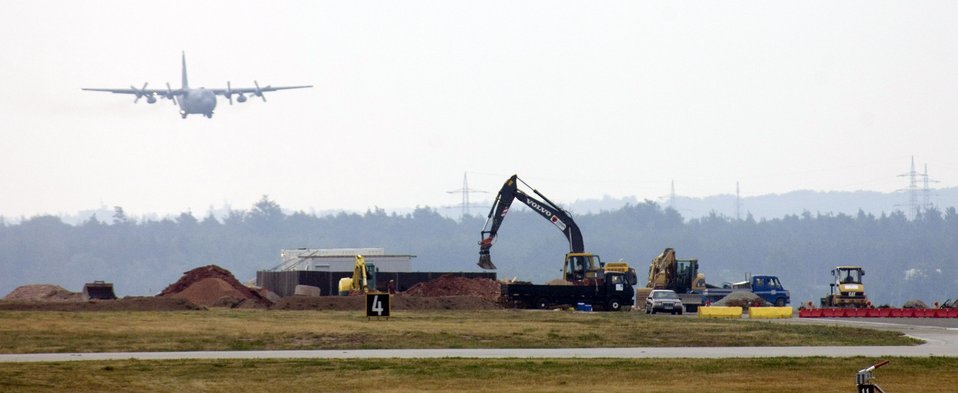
Ramstein's north airstrip receives makeover

A C-130 Hercules uses the south runway as construction continues on the north runway at Ramstein Air Base, Germany, on July 28. The north runway will be extended 1,000 feet, allowing heavy air transports to take off fully loaded. The work began in mid-April and is one week ahead of the Jan. 1 completion date.